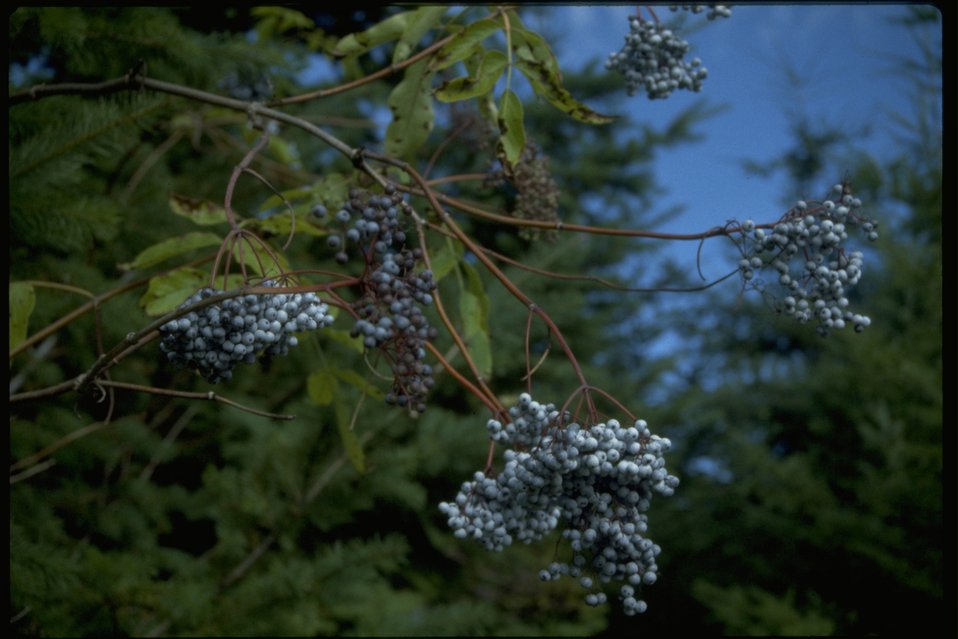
Elderberry, the edible berrylike drupe of an elder.